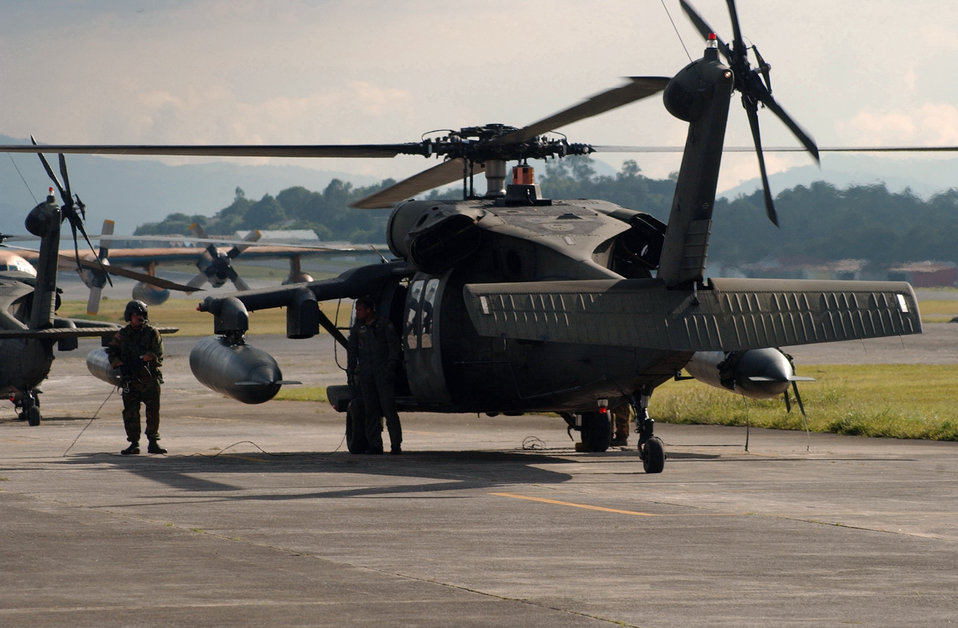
Guatemala relief aid

GUATEMALA CITY, Guatemala -- A UH-60 Black Hawk helicopter prepares for takeoff to fly relief supplies to remote mountain villages devastated by Hurricane Stan. Members of Joint Task Force-Bravo arrived here Oct. 7 to assist with recovery efforts.